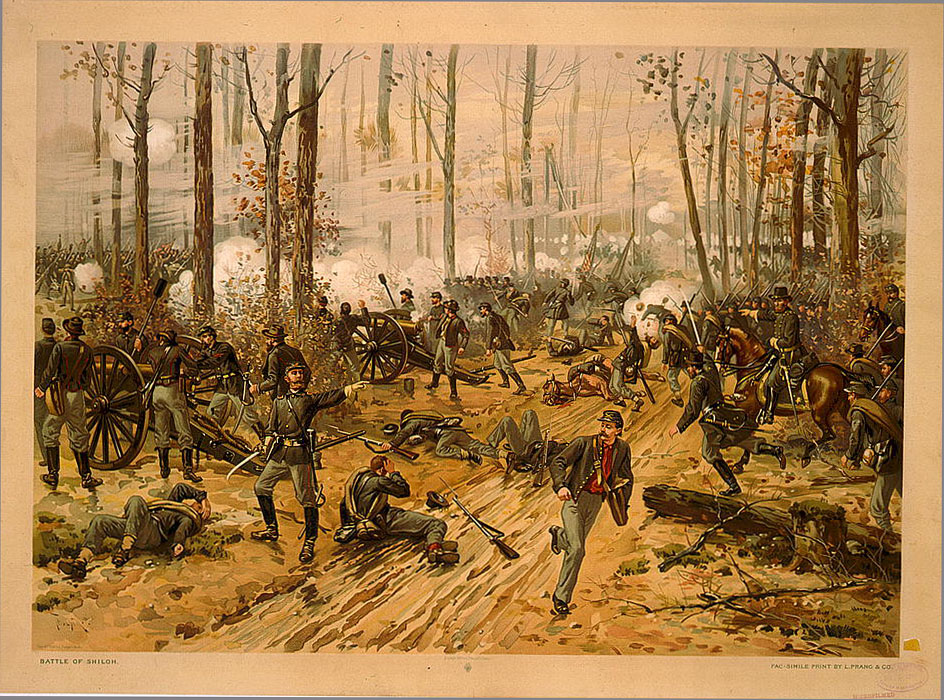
Chromolithograph of the Battle of Shiloh, American Civil War